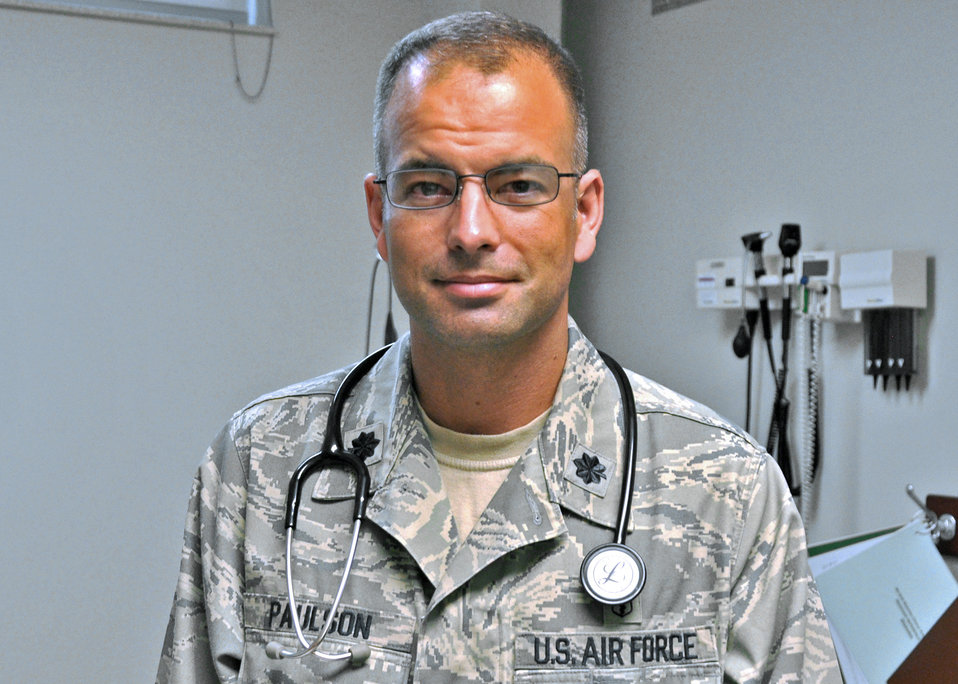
Physician earns AFA top award

Lt. Col. (Dr.) Christopher P. Paulson was presented the Air Force Association's Paul W. Myers Award Sept. 13, 2010, in Washington, D.C. Dr. Paulson is a member of the 96th Medical Operations Squadron.